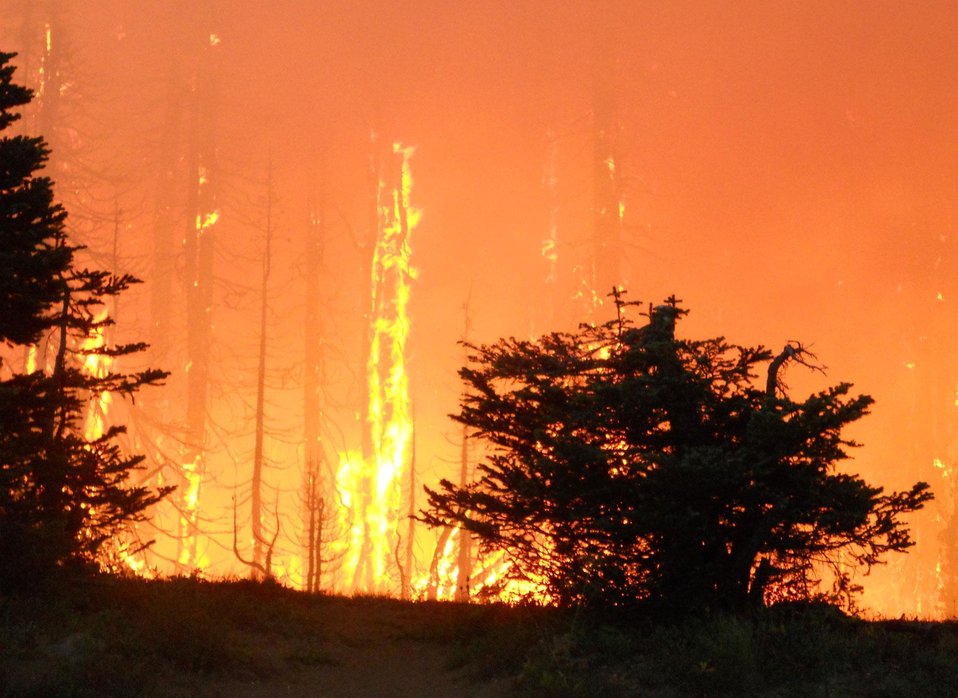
The Manastash Ridge Fire in the Wenatchee National Forest near in Cle Elum, WA began on Aug. 9, 2013 began by lightning has consumed approximately 2,352 acres and is 40% contained.